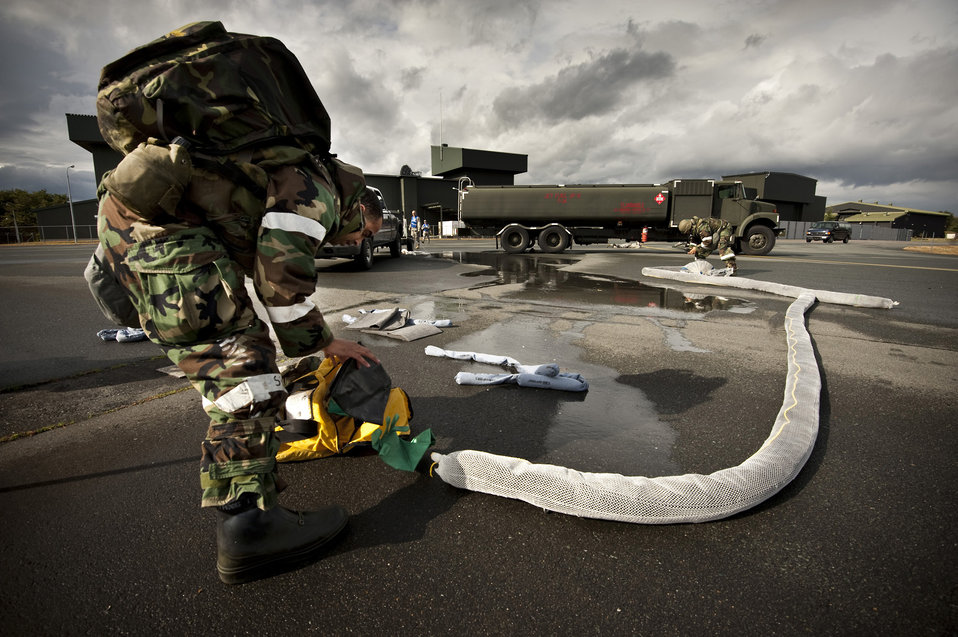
It's only water

Staff Sgt. Joshua Eisenman, a fuel expediter with the 35th Logistics Readiness Squadron, grabs protective gloves to help contain a simulated 'fuel leak' from a refueler truck, Nov. 9, 2010, during an operational readiness exercise at Misawa Air Base, Japan. The exercise evaluation team dumped water to help the responders visualize the 'spill' of approximately 600 gallons of fuel.